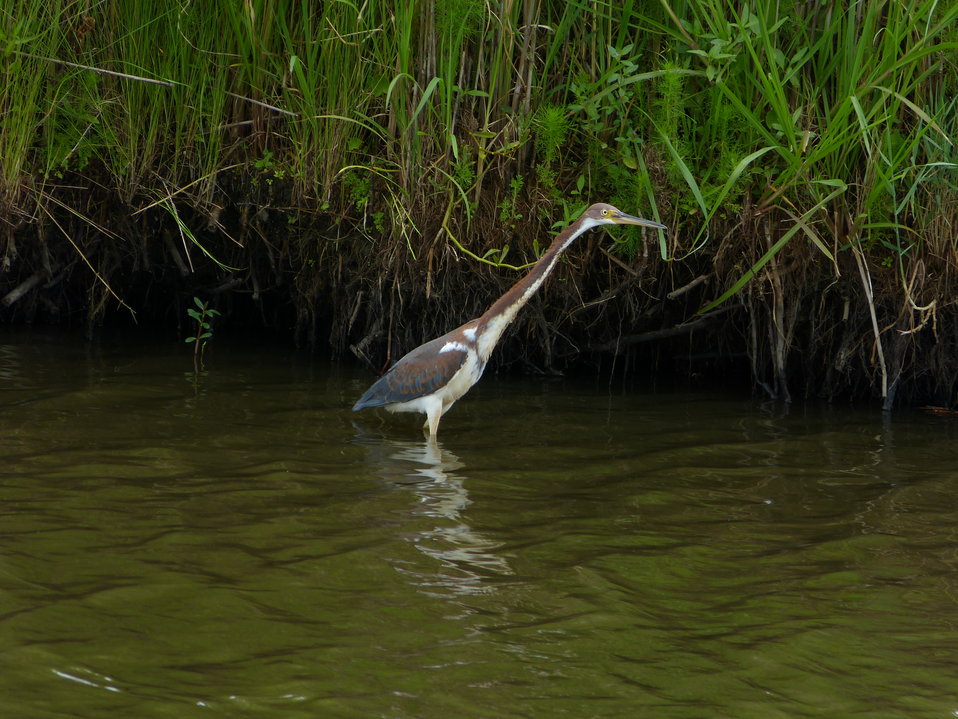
Tricolored heron

At Mattamuskeet National Wildlife Refuge in North Carolina.